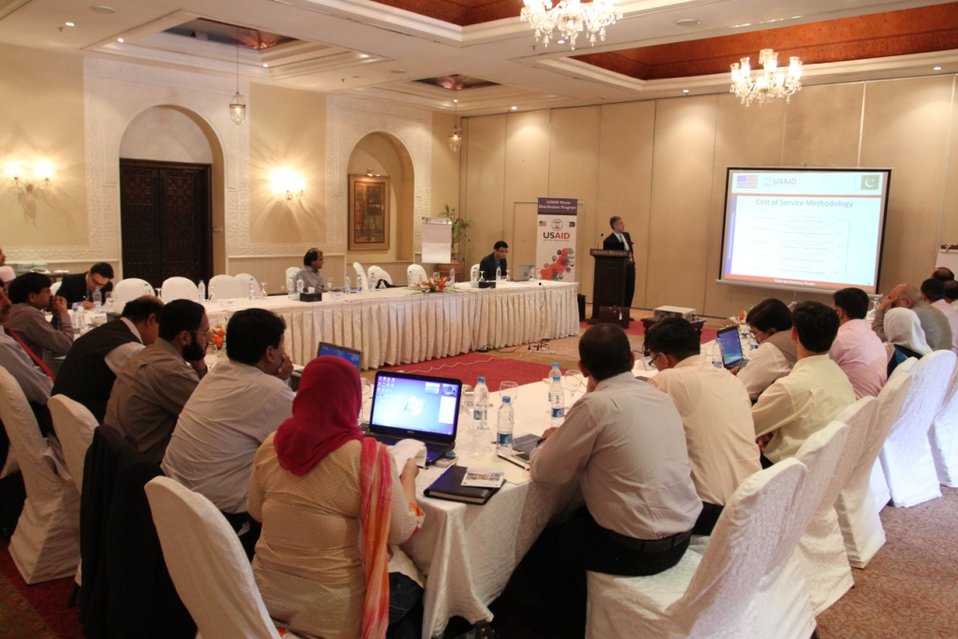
Workshop on Cost of Service and Tariff Design Study

Islamabad, June 7, 2012: The USAID Power Distribution Program today held a workshop for DISCOs on Cost of Service and tariff design. This workshop is a continuation of a series of capacity-building workshops through which the Power Distribution Program is providing training to DISCO employees in conducting Cost of Service (CoS) studies as well as providing guidance on tariff setting principles.